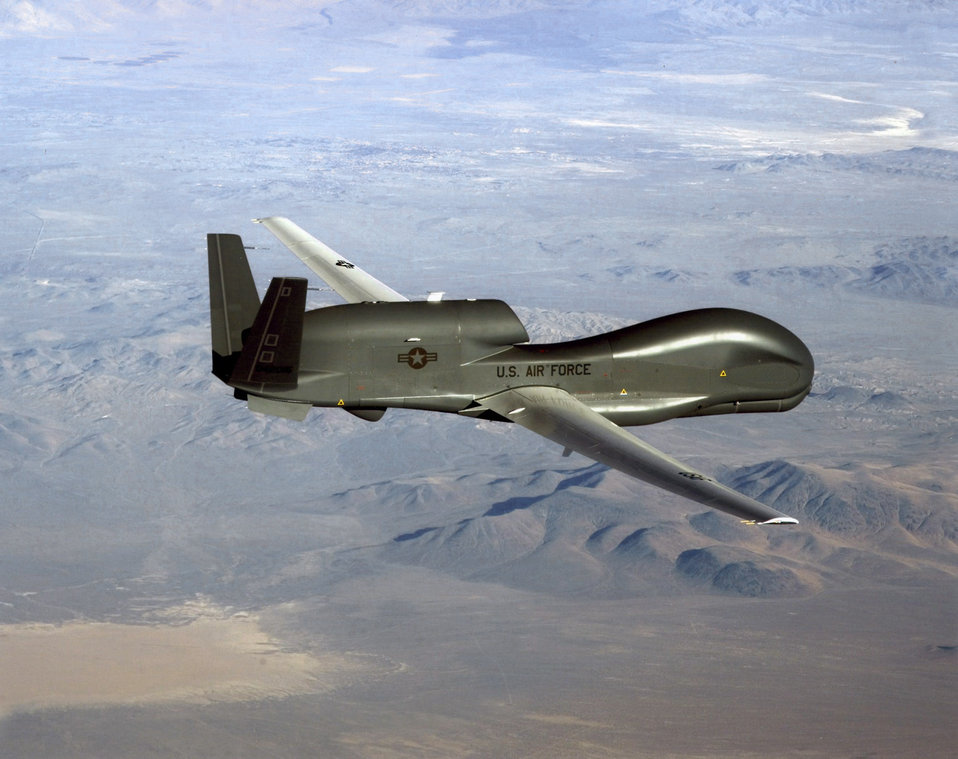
RQ-4 Global Hawk

An RQ-4 Global Hawk soars through the sky to record intelligence, surveillence and reconnaissance data. Air Force and Navy officials met to discuss joint training with the RQ-4.